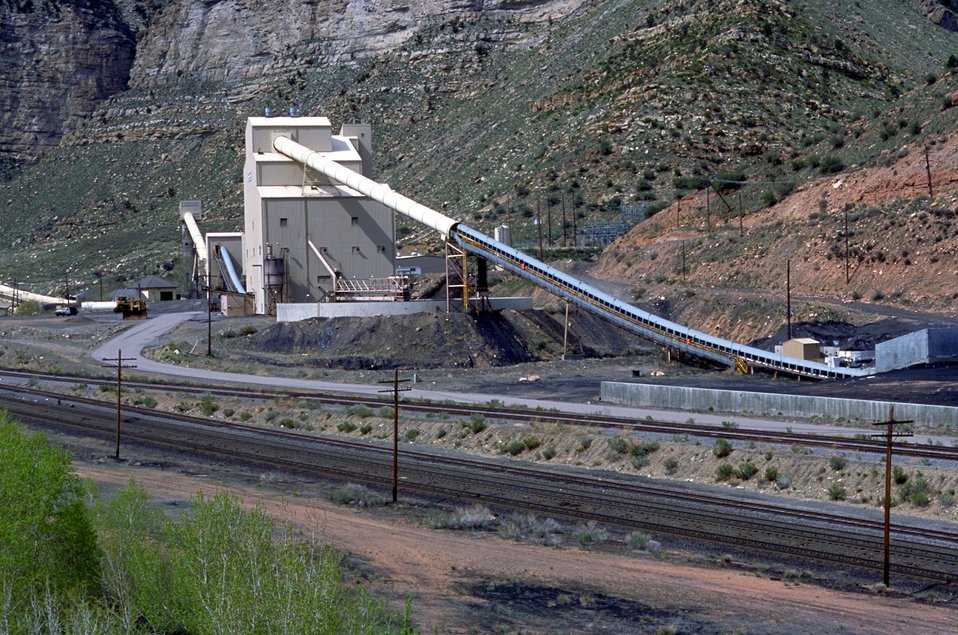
Coal production near Price, Utah.